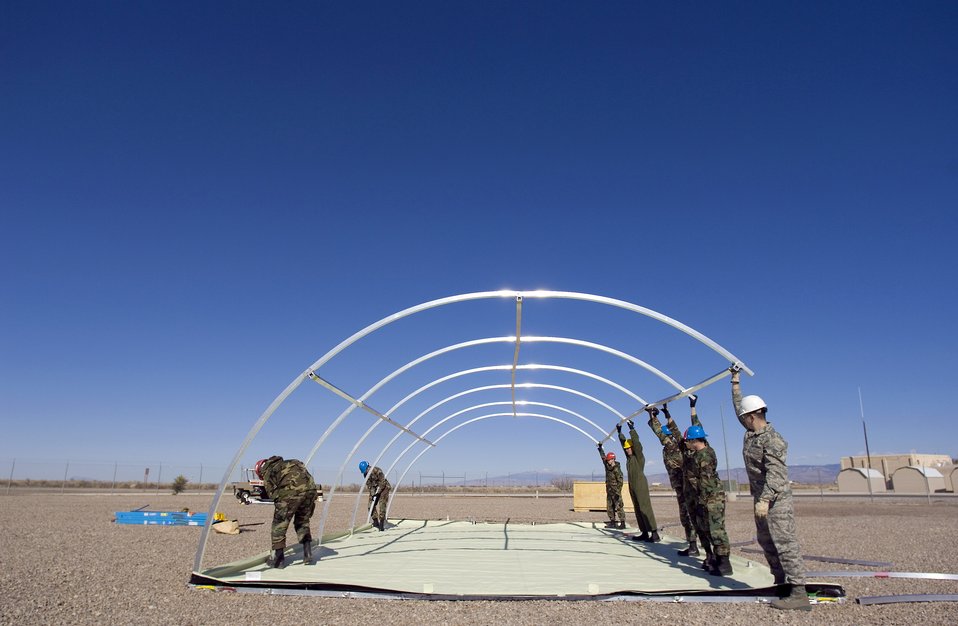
Providing shelter is a BEAR

Airmen from the 49th Material Maintenance Group work to build a small shelter system during a Jan. 16 exercise at Holloman Air Force Base, N.M. Members of the 49th MMG can build a Basic Expeditionary Airfield Resource, or BEAR, in austere conditions anywhere in the world. Airmen of the 49th MMG maintain a constant state of readiness and can be tasked to support any Department of Defense or Federal Emergency Management Agency humanitarian operations along with primary duties of supporting combat operations.